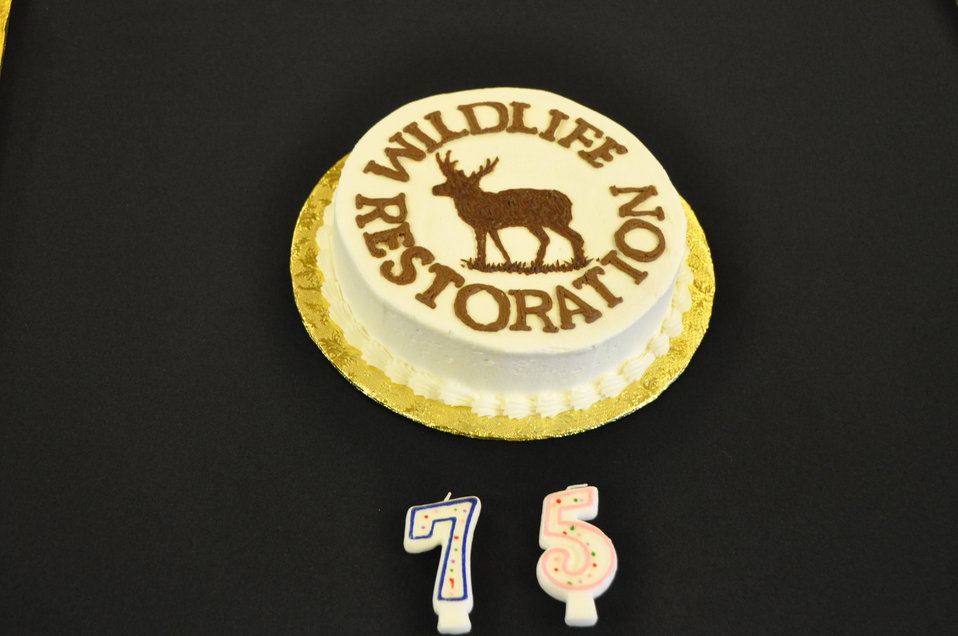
WSFR 75th Anniversary

The Pittman-Robertson Act generated the impetus behind the Wildlife and Sport Fish Restoration Programs in 1937.